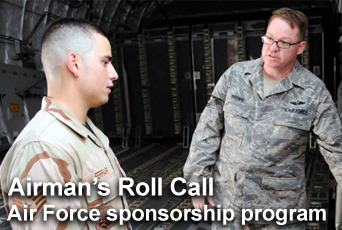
Airman's Roll Call: Air Force sponsorship program

The sponsorship program is part of the Air Force Individualized Newcomer Treatment and Orientation program, or INTRO, which is designed to facilitate permanent change of station moves by welcoming and assisting newly arrived Airmen and their families. This week's Airman's Roll Call focuses on sponsorship and the benefits Airmen and their families have when moving to a new location.